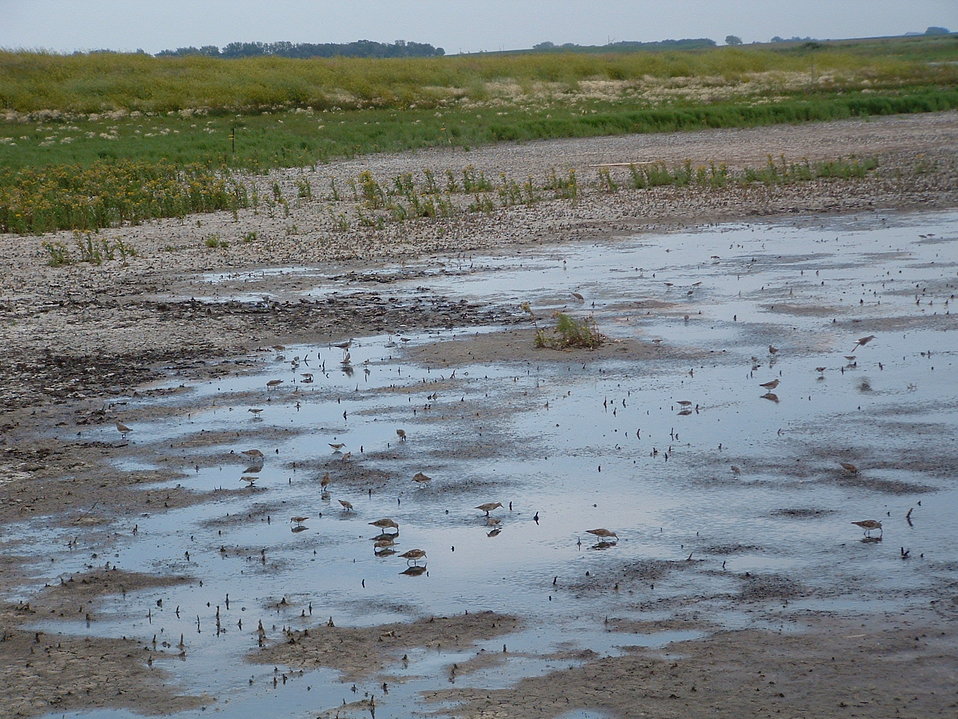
Going, going....habitat!

What appears to be disappearing habitat in late summer is actually just what migrating shorebirds are looking for. Wetlands that dry up provide excellent feeding habitat for many species of shorebirds and provide good opportunities for birdwatchers. Wetting and drying cycles also make wetlands more productive.